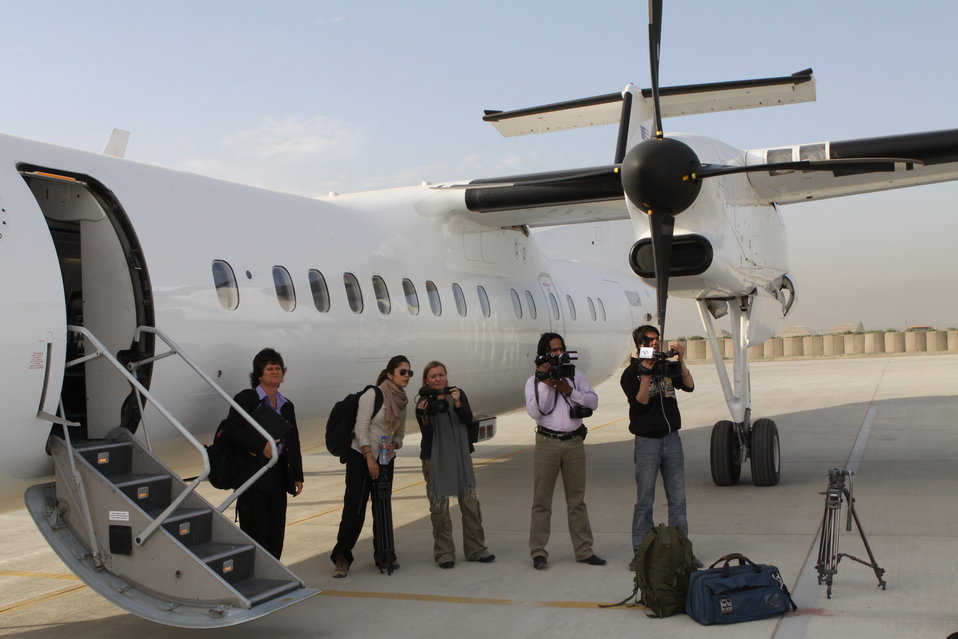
100525 Hirat Marble Conference 002